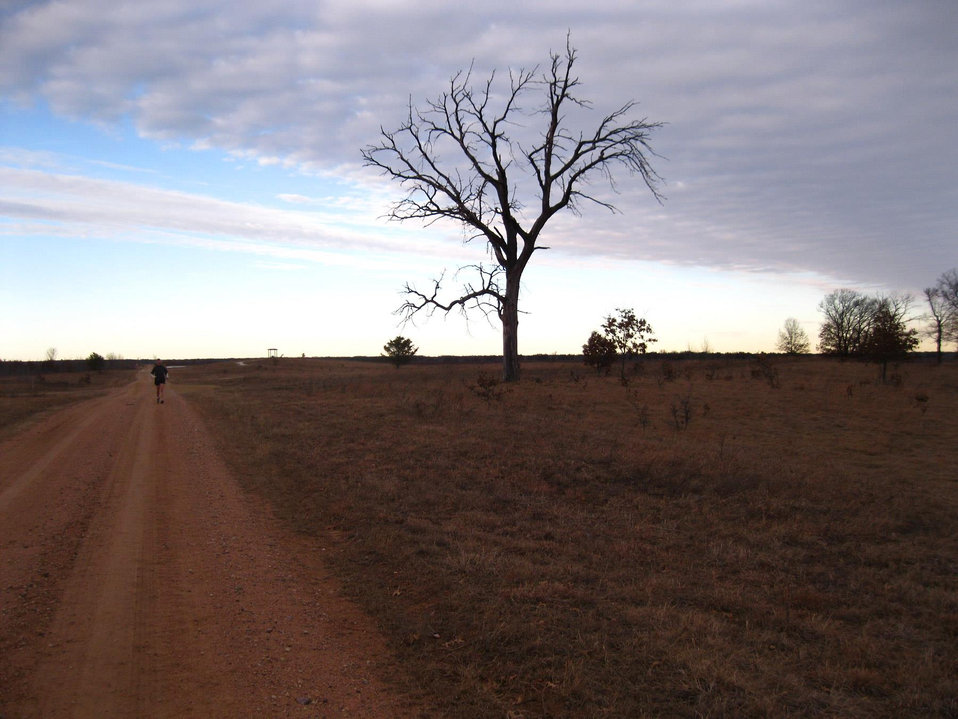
red road and blue sky

Necedah National Wildlife Refuge, WI
January 2012